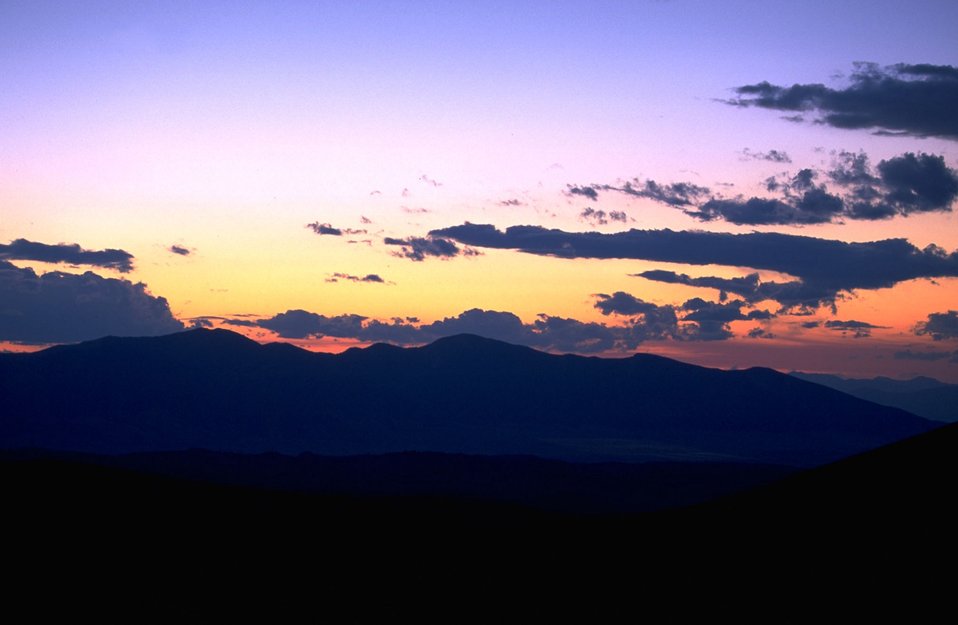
Hills silhouetted against an evening sky